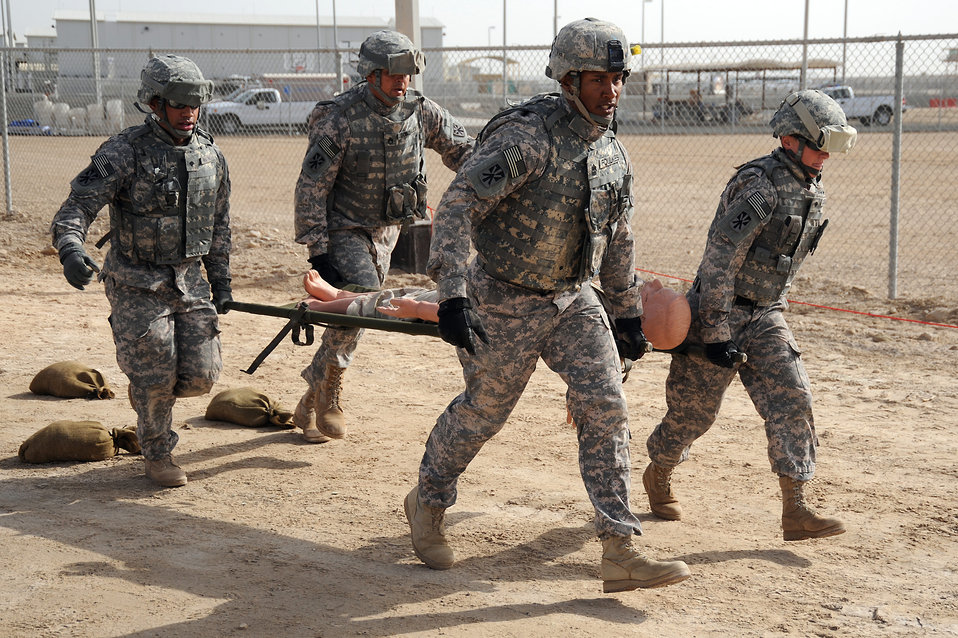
Challenge pushes Airmen, Soldiers

Army Spc. Alexandre Whitnell, Army Staff Sgt. Patrick Gonzales, Army 1st Sgt. David Foulkes and Army Spc. Jennifer Stecher carry a